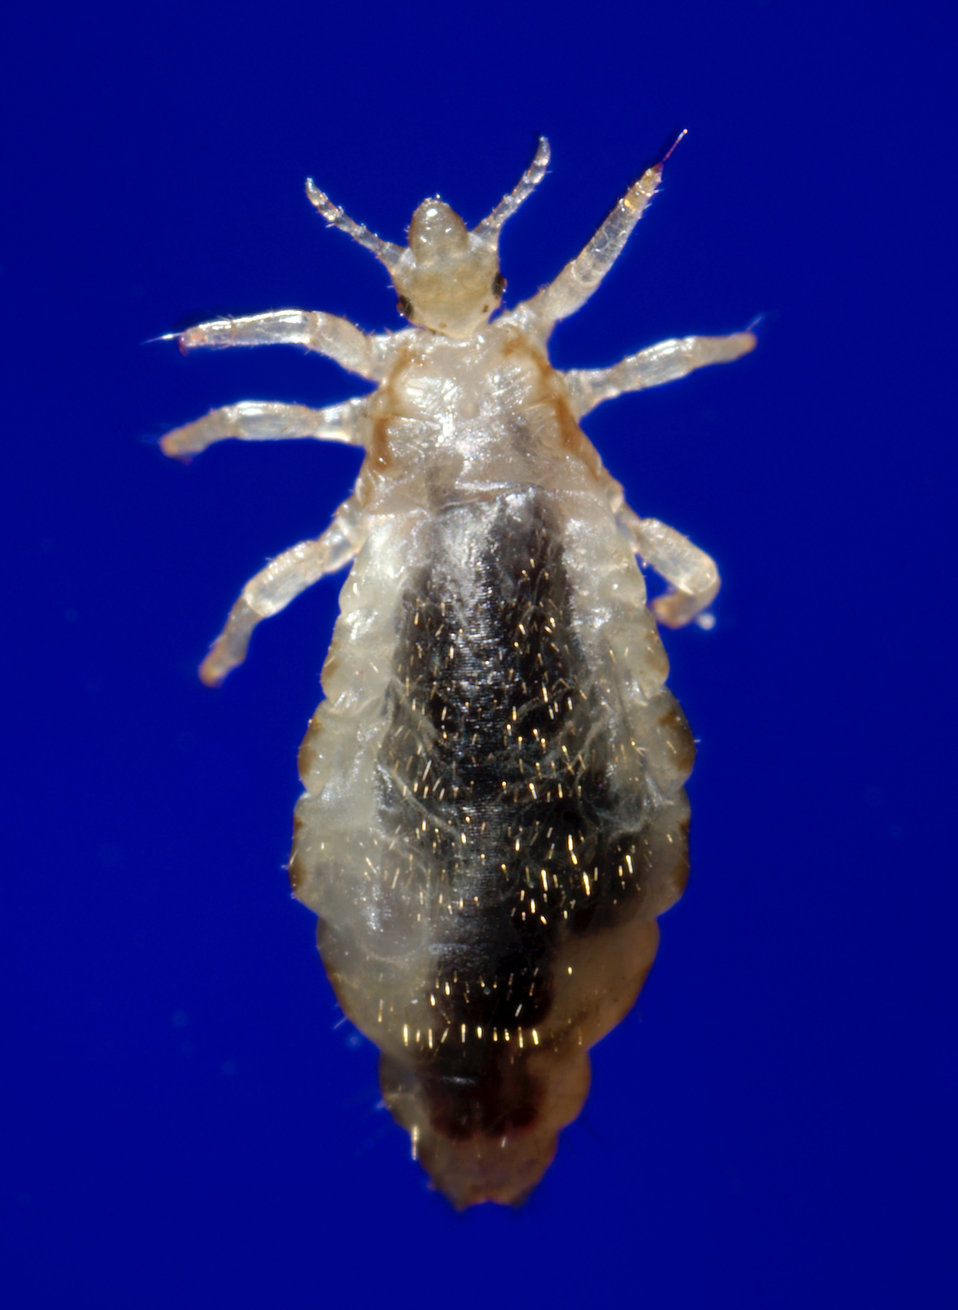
This 2006 photograph depicted a dorsal view of a female body louse, Pediculus humanus var. corporis. Some of the external morphologic features displayed by members of the genus Pediculus include an elongated abdominal region without any processes, and three pairs of legs, which are all equal in length and width.Body lice are parasitic insects that live on the body, and in the clothing or bedding of infested humans. Infestation is common, found worldwide, and affects people of all races. Body lice infestations spread rapidly under crowded conditions where hygiene is poor, and there is frequent contact among people. Note the sensorial setae, or hairs that cover the louse's body, which pick up, and transmit information to the insect about changes in its environment such as temperature, and chemical queues. The dark mass inside the abdomen is a previously ingested blood meal.